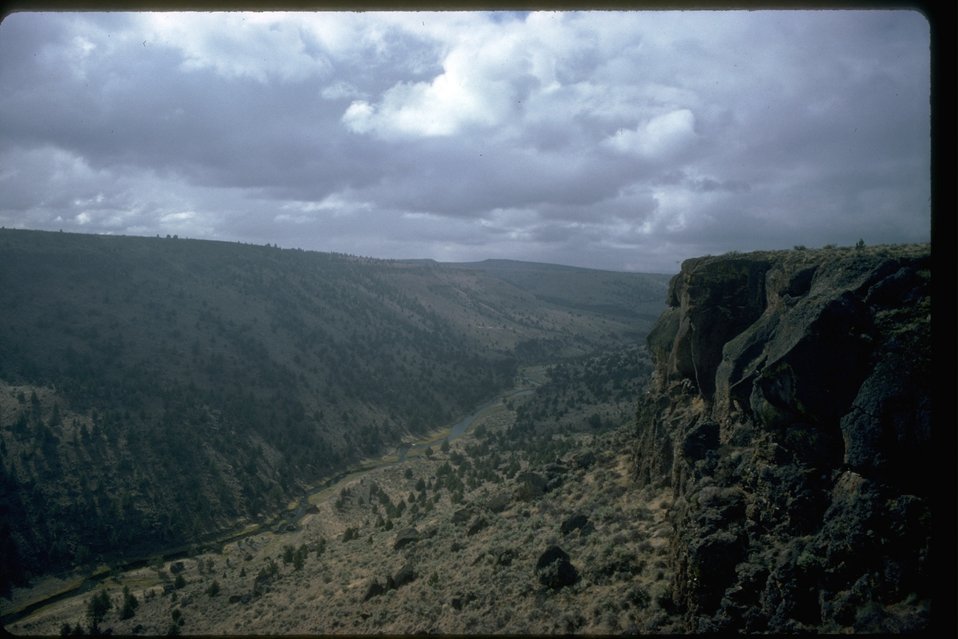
A scenic looking down on river from the rim in the South Fork Wilderness Study Area. OR 5-33